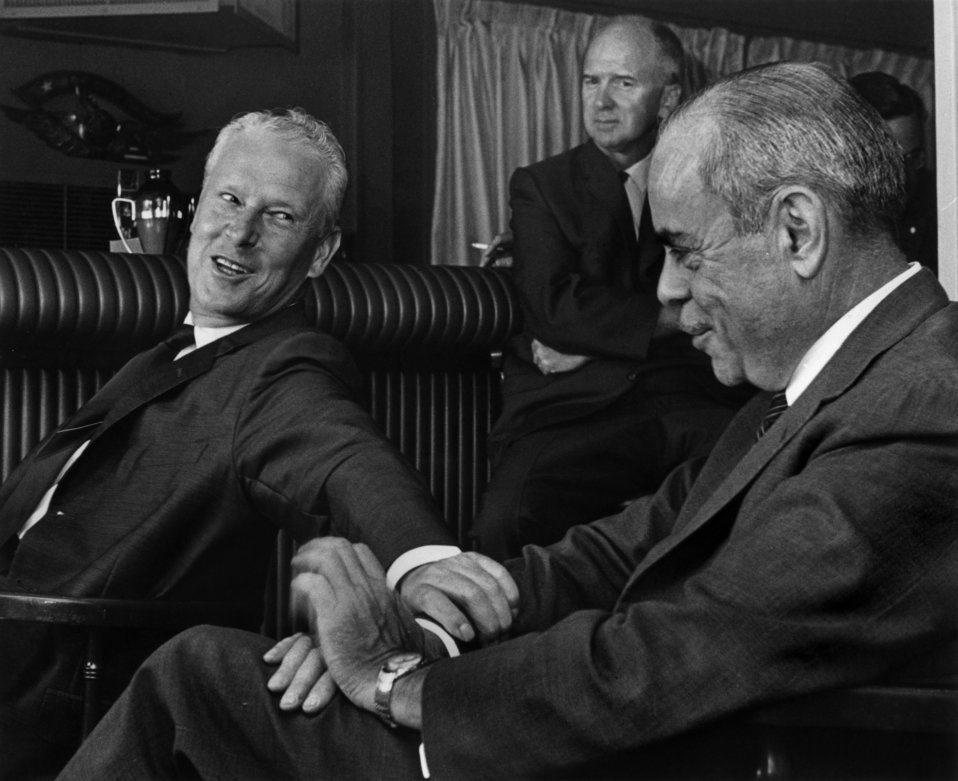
Sen Al Gore Sr. and AEC Manager Sam Sapirie Oak Ridge

64-0515-10a DOE photo Ed Westcott 1968 Oak Ridge Tennessee